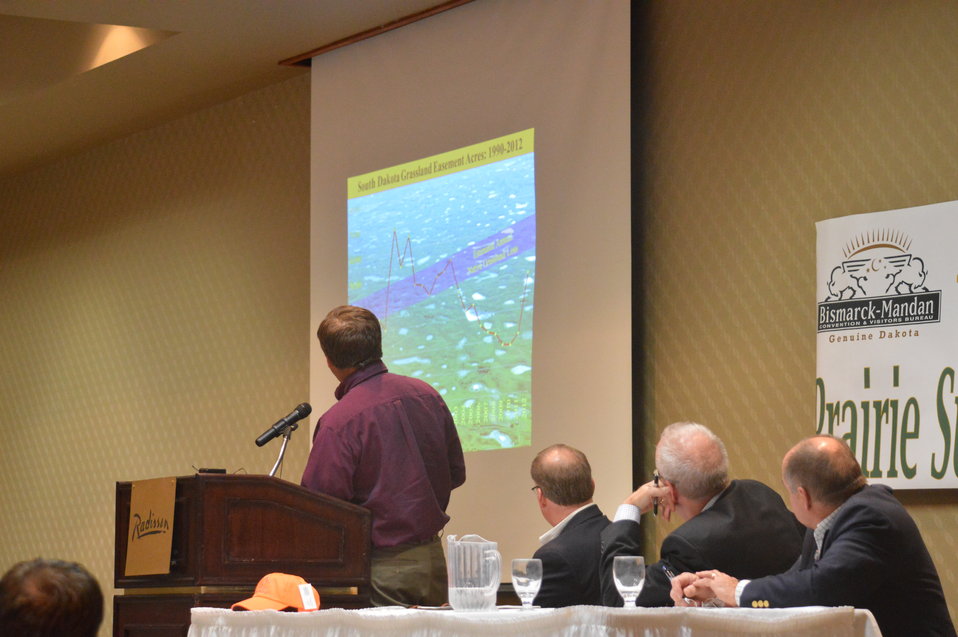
Lloyd Jones presenting

Through the efforts of Ducks Unlimited and its partners, a Prairie Summit meeting was held in June 2013 in Bismarck, North Dakota, bringing key stakeholders to the table to identify and begin to address the immediate needs of the overall effort to conserve wetlands and grasslands, as well as bring media attention to the issues at hand and the urgency of the situation.